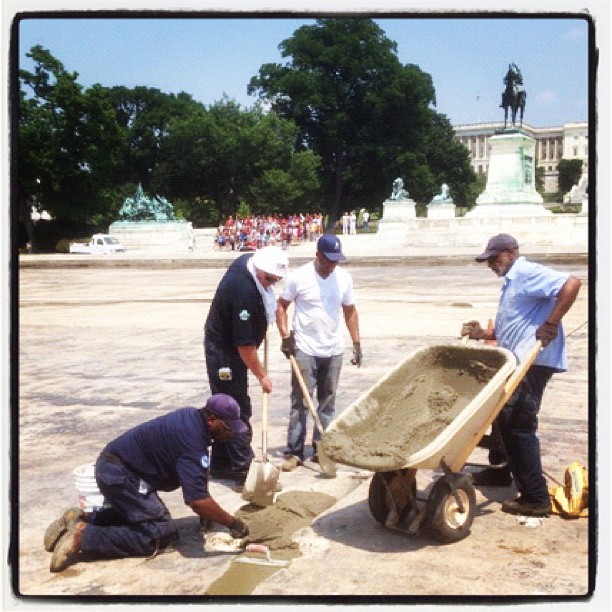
An improved reflection: AOC masons making repairs to drained Capitol Reflecting Pool.